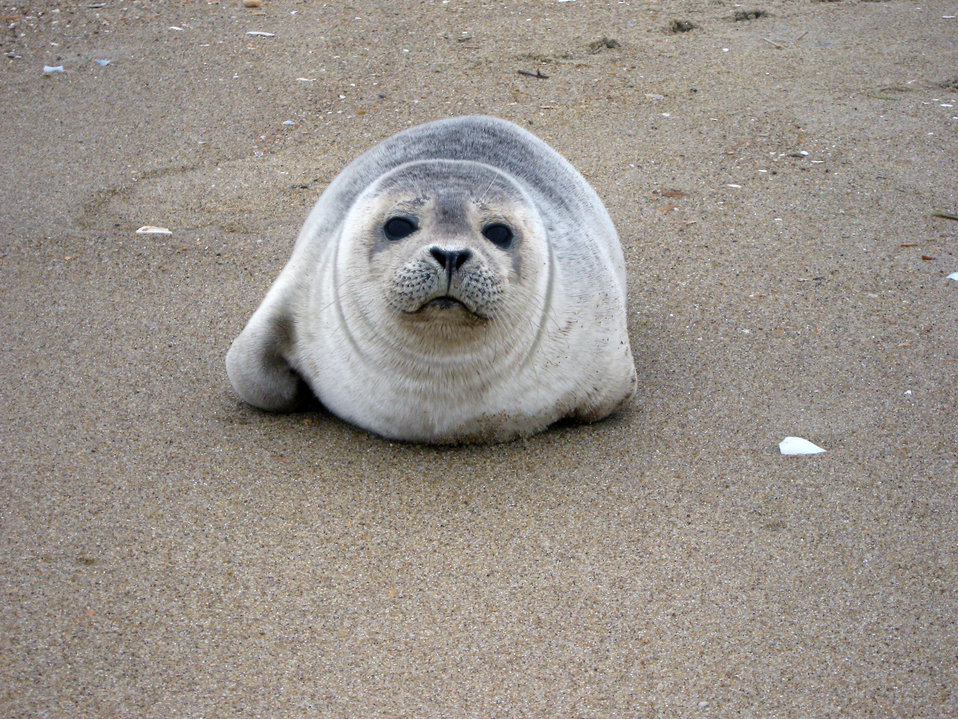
Photo of the Week - Seal pup at Back Bay National Wildlife Refuge, VA

Photo of the Week - 01/10/11

Seal pup at Back Bay National Wildlife Refuge in Virginia.